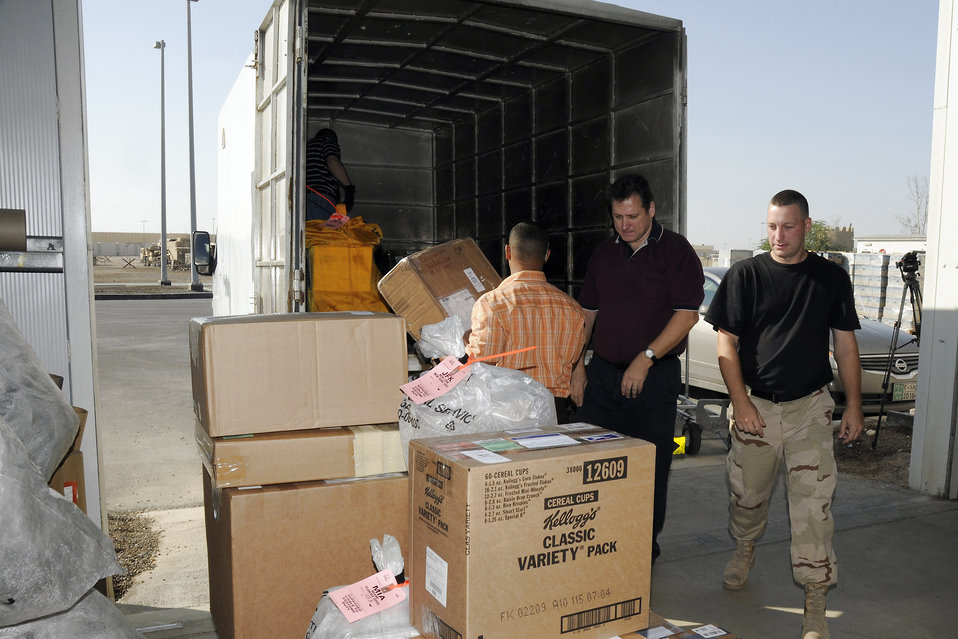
Letters, packages to Airmen increases during holiday season

Mike Ruzza, Oneris Barett, Scott Kirsch and Senior Airman Christopher Teixeira load a mail truck with outgoing mail Dec. 8 at an air base in Southwest Asia. Airman Teixeira is with the 380th Expeditionary Civil Engineer Fire and Emergency Services. The civilians work for Alutiiq International Solutions LCC, which is contracted to provide personnel and services for the 380th Air Expeditionary Wing's Post Office. Mr. Ruzza is a native of Tampa Bay, Fla. Mr. Barett is from the Bronx, N.Y. Mr. Kirsch hails from Toledo, Ohio, and Airman Teixeira is deployed from Ellsworth Air Force Base, S.D., and his hometown is Battle Creek, Mich.